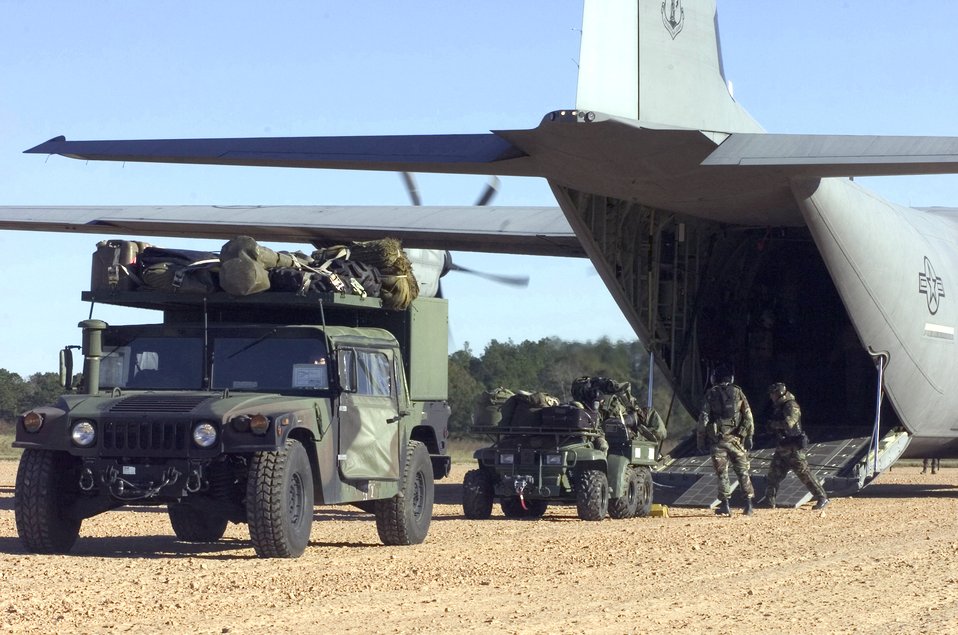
Tough test

FORT POLK, La (AFPN) -- Airmen and Soldiers load cargo onto a C-130J Hercules during a Joint Readiness Training Center exercise. The center here focuses on improving unit readiness by providing highly realistic, stressful, joint and combined arms training across the full spectrum of conflict -- current and future.